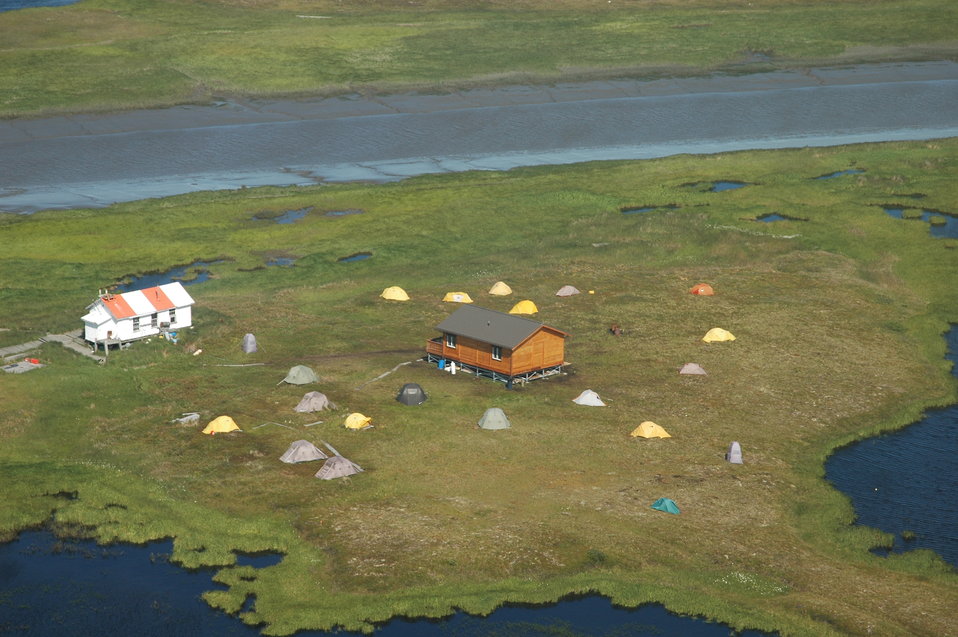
Cackler Family Flock Camp Location

One of the camp sites for the cackling goose project is located at Old Chevak.
'Old' Chevak, is located on the north bank of the Keoklevik River, 9 miles east of Hooper Bay. This site was known to flood from high storm tides. Because of this flooding the village was moved to the north bank of the Niglikfak River, 17 miles east of Hooper Bay between 1948 and 1950.

The name Chevak refers to 'a connecting slough,' on which 'Old' Chevak was situated.

This site has been used to stage field camps since the 1960's.

The church, boat house (recently taken down) and graveyard are still present at the original village site.

USFWS Yukon Delta NWR